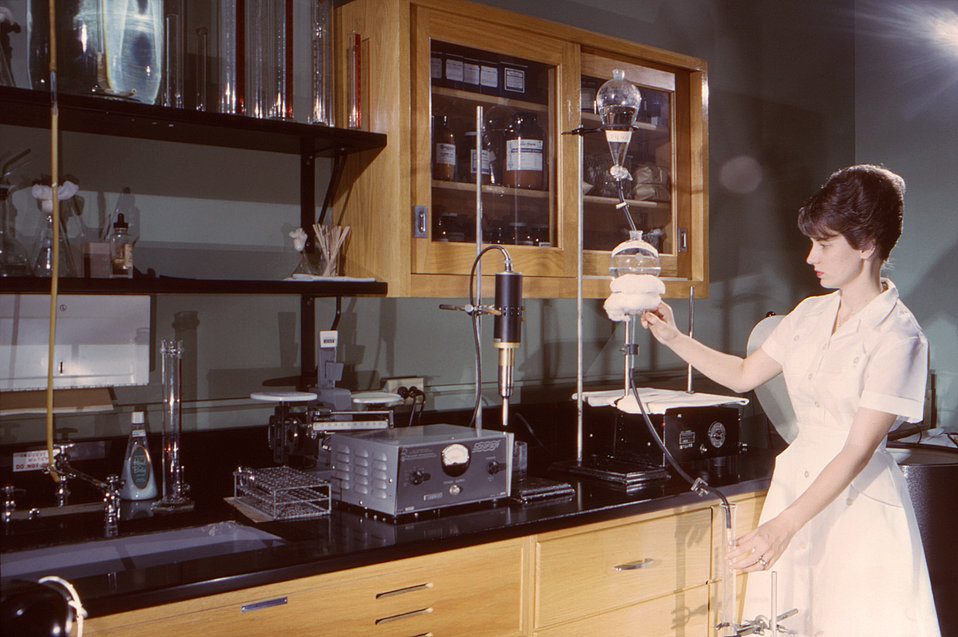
This historic 1963 photograph depicted a lab technician, Geraldine Wiggins, as she was performing a chromatographic antigen fractionation, which consisted of the separation of antigen fractions from Histoplasma capsulatum, using pH and molarity. Using a shaker, Ms. Wiggins was also about to perform a subsequent agar gel test upon human histoplasmosis sera.